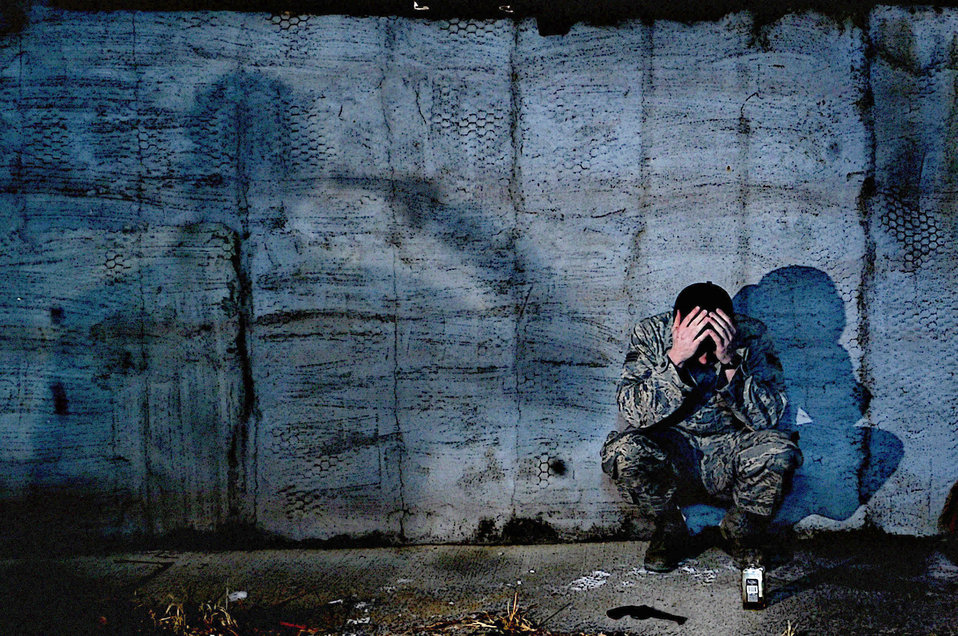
Suicide prevention